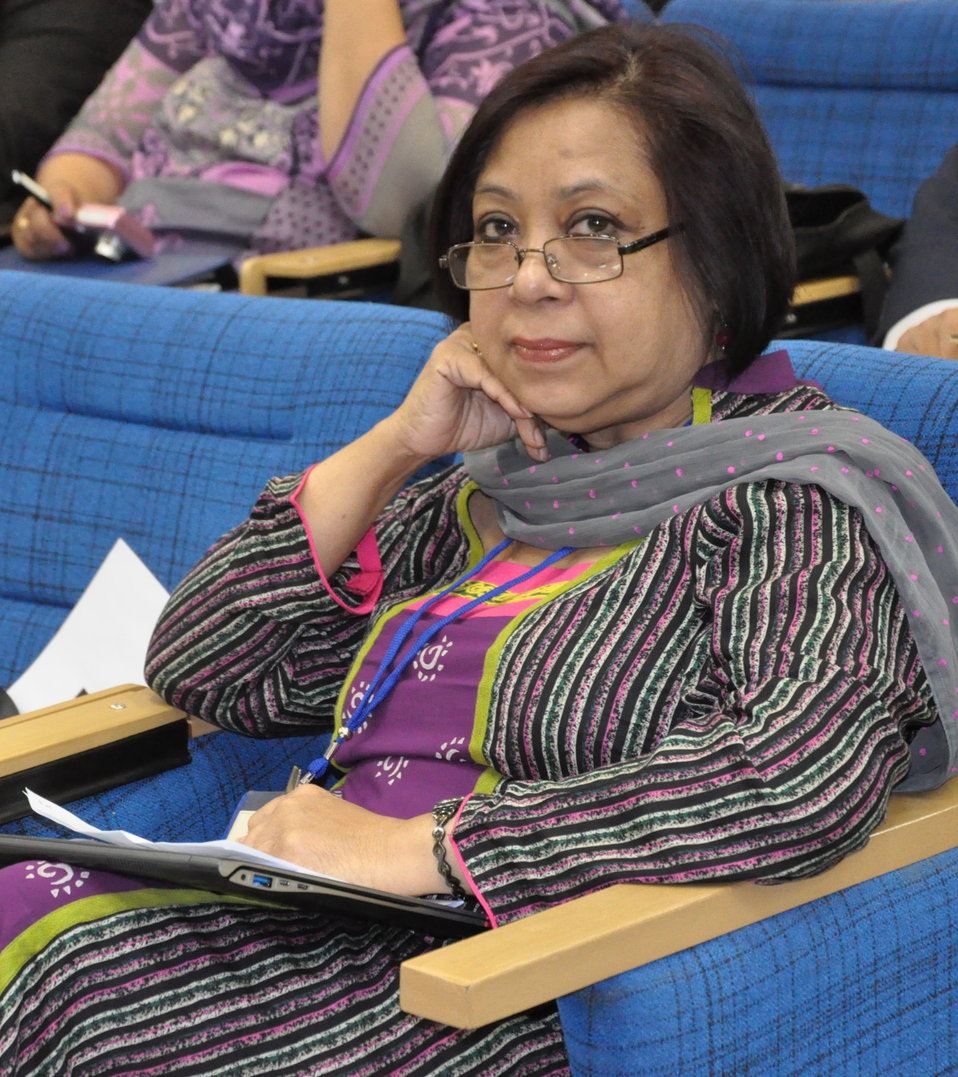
Delegate Tasneem Athar, representing CAMPE, Bangladesh